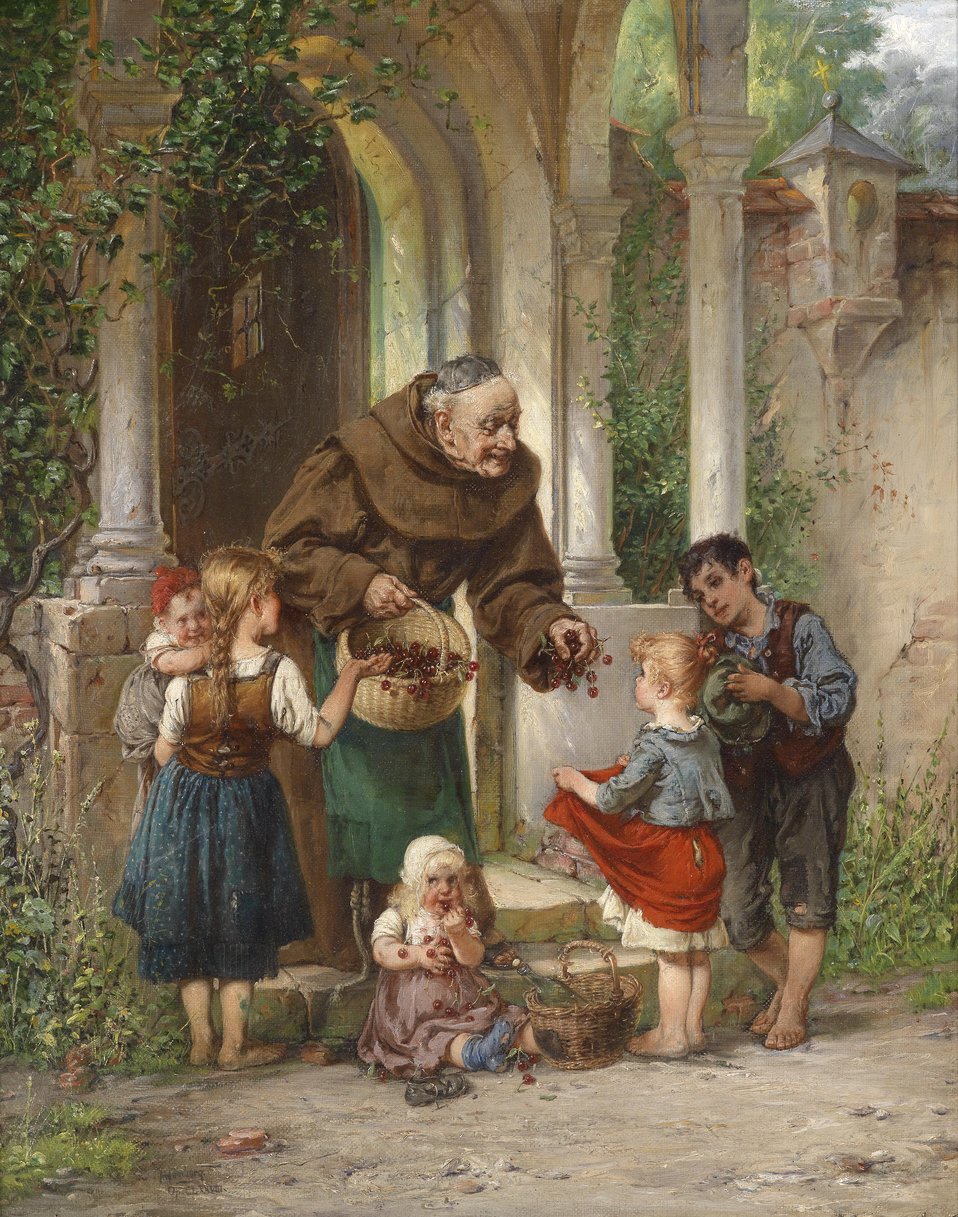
Adolf Humborg Kirschen für die Kinder